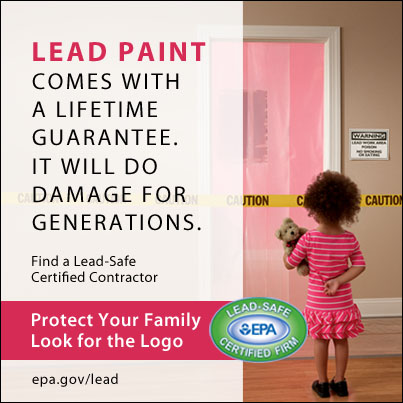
Lead Paint

Protect your family: Look for the logo. Use a lead-safe certified contractor when painting or renovating.